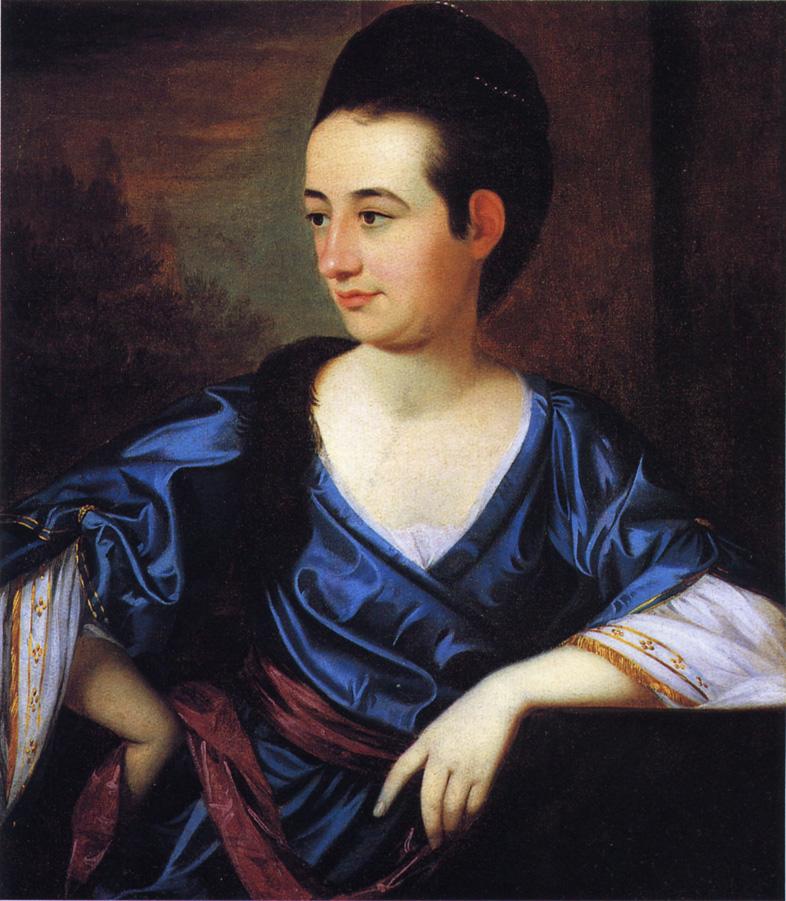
Mrs William Alston Jr Henry Benbridge